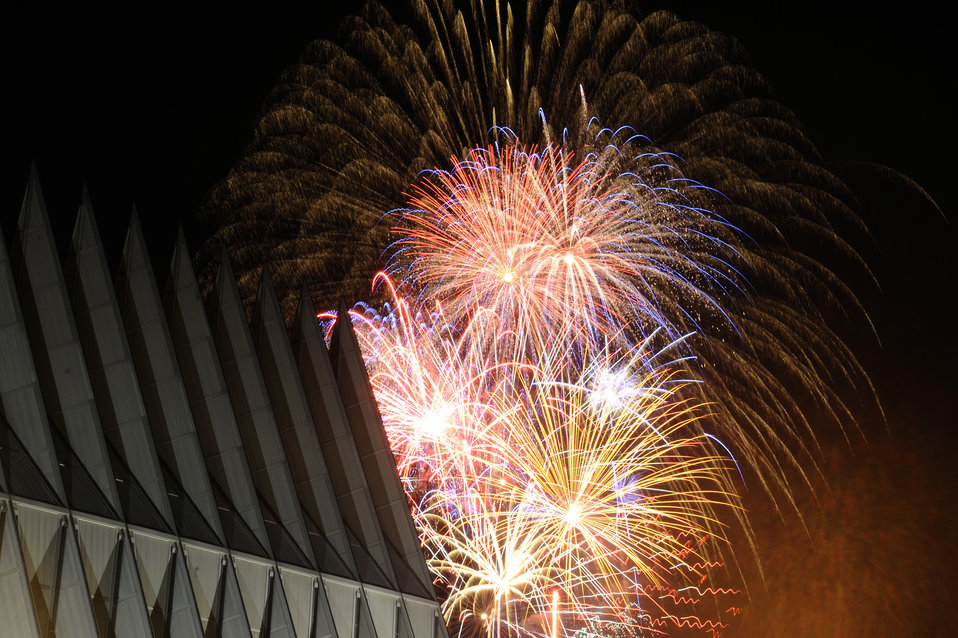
July 4th Air Force Academy

Fireworks explode over the Air Force Academy Cadet Chapel during the Fourth of July fireworks show at the Air Force Academy Jul 4.